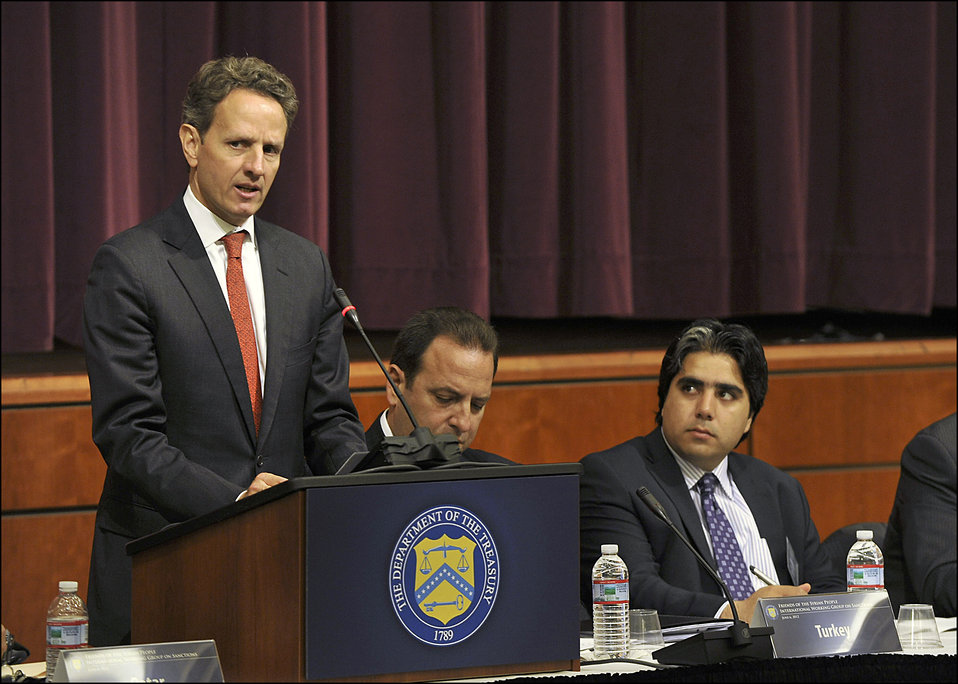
Secretary Geithner speaks before the Friends of Syrian People International Working Group on Sanctions